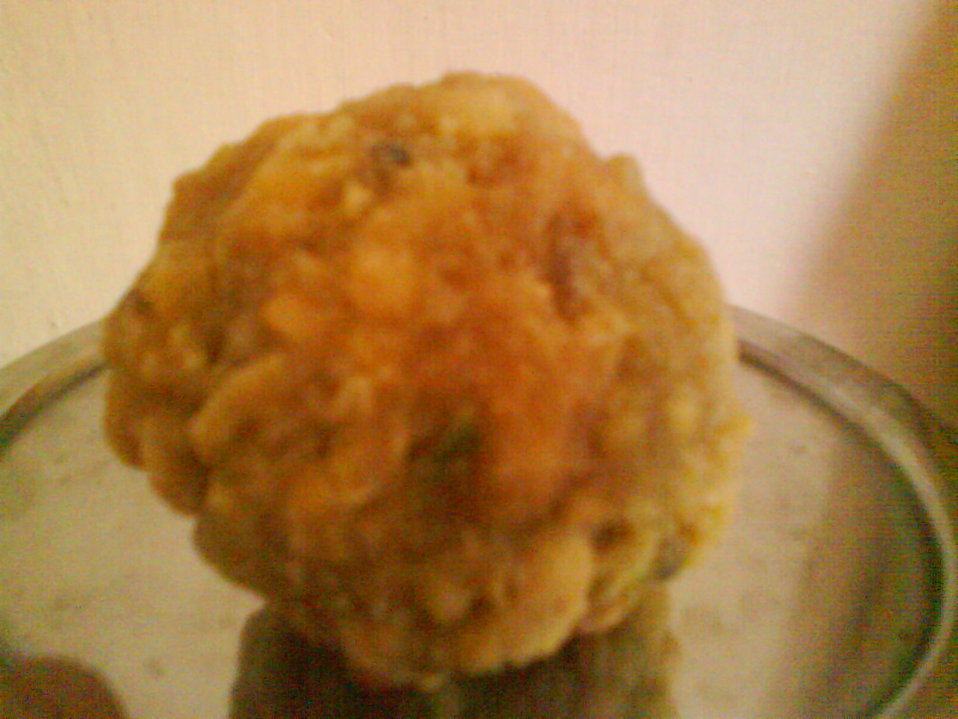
This is an Indian sweet, which is given as a prasad at Hindu temple of Yadagirigutta.